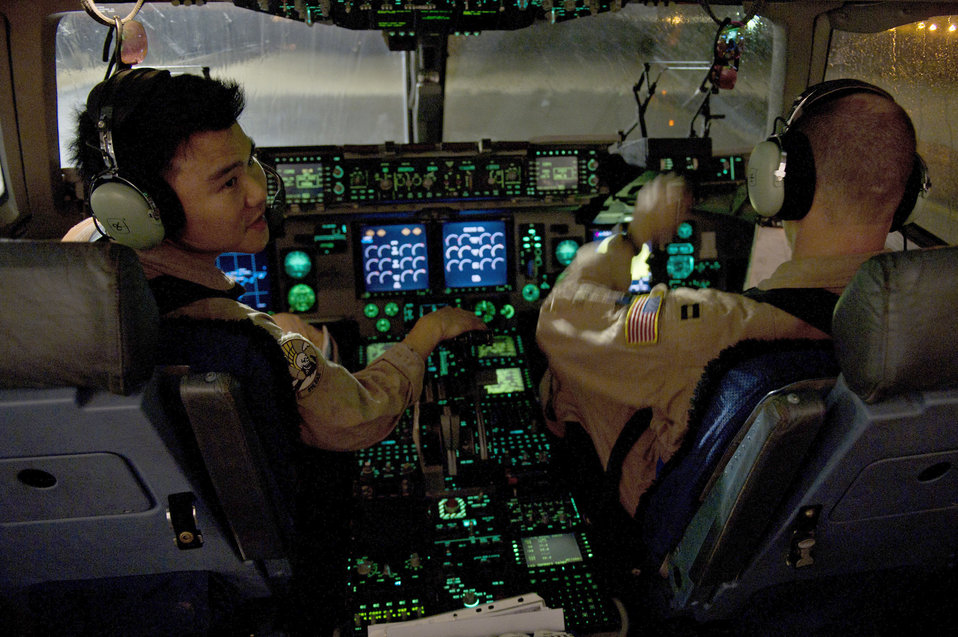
Air delivery mission

Captains Raymond Jang (left) and Timothy Siemer conduct engine startup procedures on a C-17 Globemaster III April 15, 2011, in Southwest Asia, prior to a mission. Both Captains are assigned to the 816th Expeditionary Airlift Squadron.